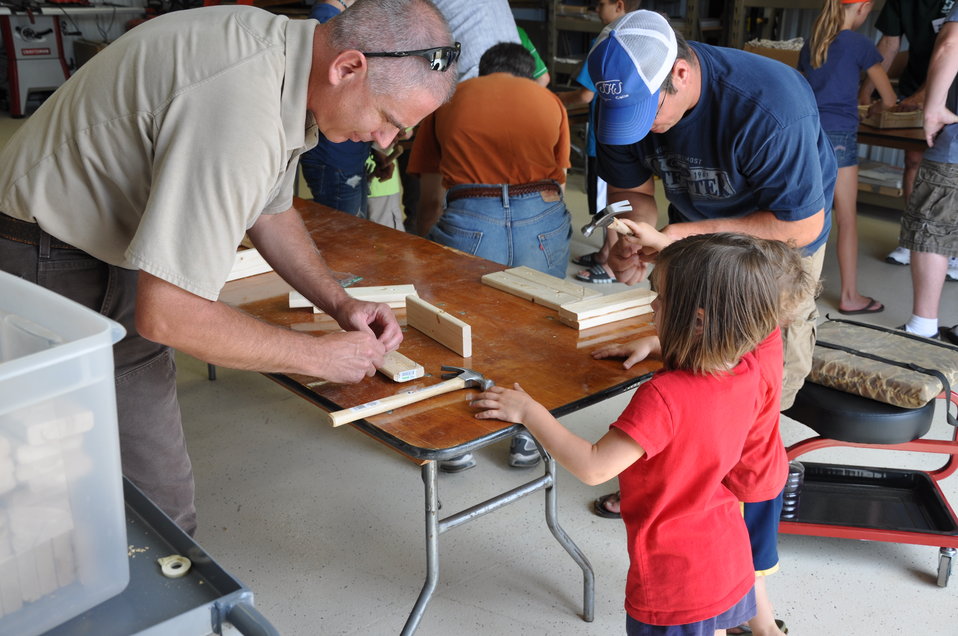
Building bird feeders